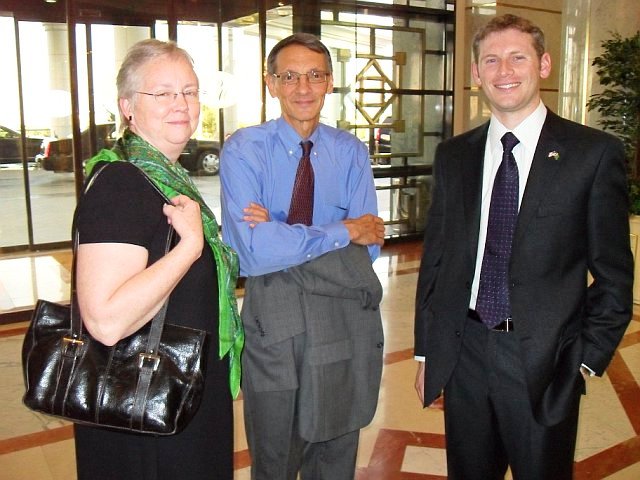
U.S.-Turkmenistan Business Council Participants Pose for a Photo

Participants of the U.S.-Turkmenistan Business Council pose for a photo in a hotel in Ashgabat, Turkmenistan, on June 16, 2010.